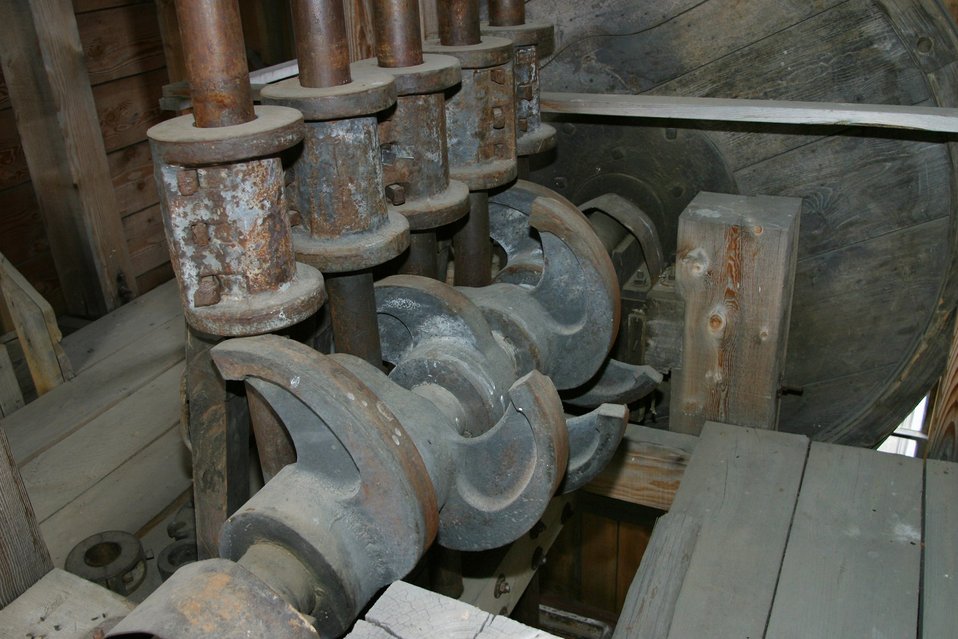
A replica of the Rabbit Mine 1926 stamp mill near Greenhorn in the Blue Mountains of eastern Oregon. It is used to interpret the importance of mining in western history, and the relationship of gold mining to the westward migration story.